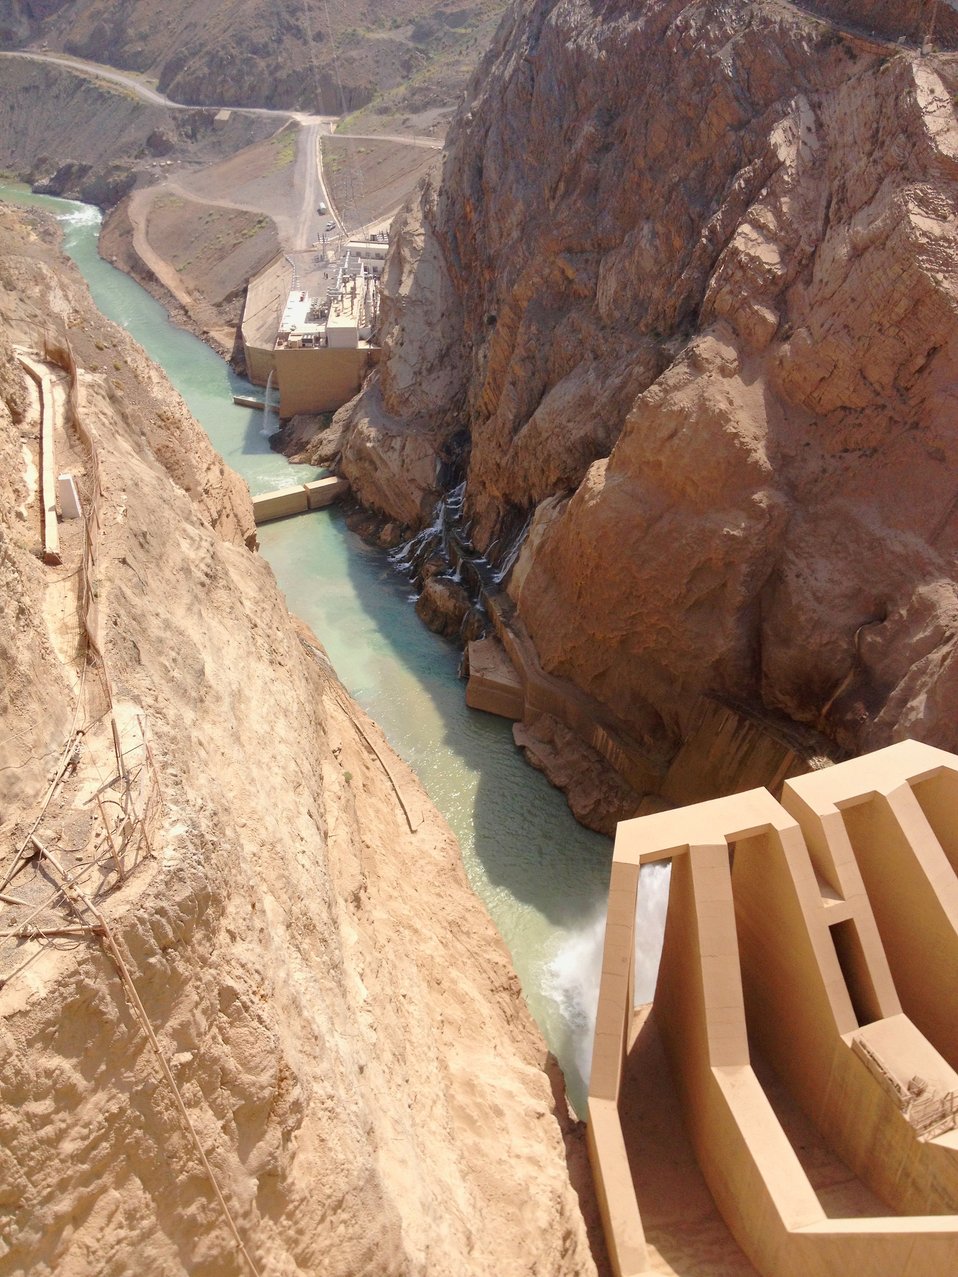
Gomal Zam 02